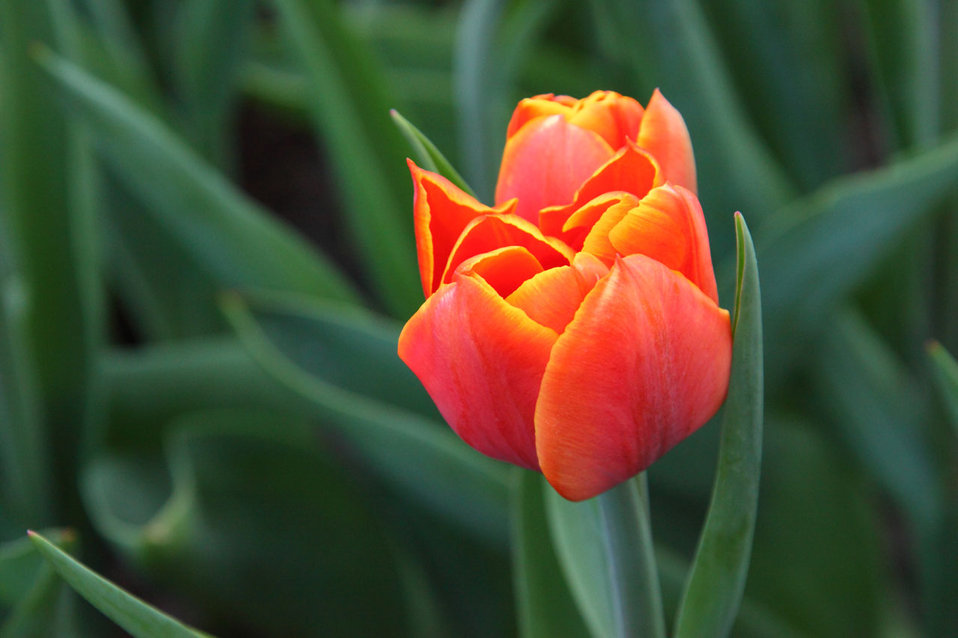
Orange tulip on green background.